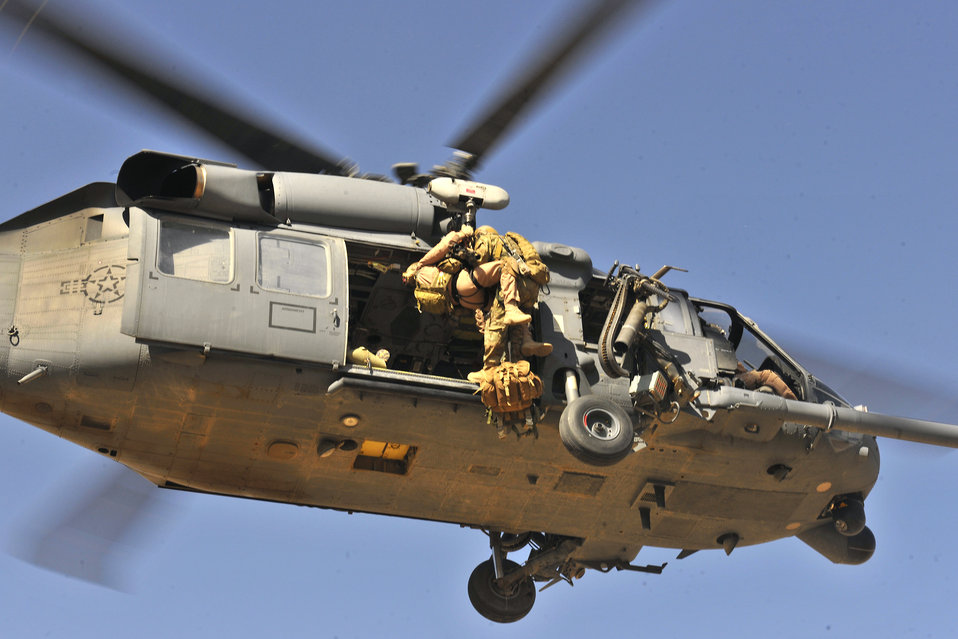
Pararescueman train to help save lives

Pararescuemen hoist Brig. Gen. Jack L. Briggs onto an HH-60G Pave Hawk during a training mission at Bagram Airfield, Afghanistan, Sept. 24, 2010. The training mission provided a glimpse of what the 33rd ERQS brings to the fight and the capabilities it provides to combat commanders.